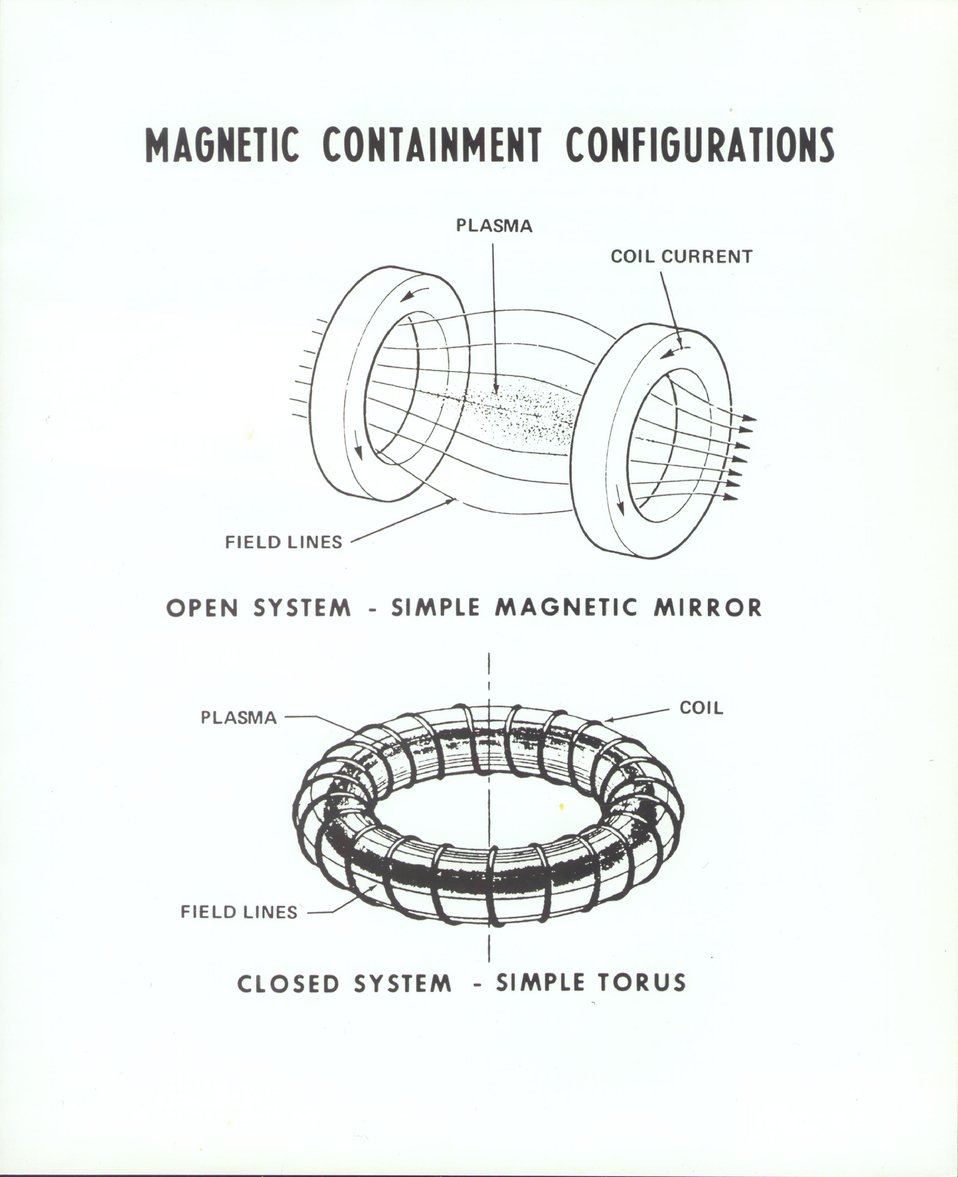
FUSION POWER FOR THE FUTURE...Two fundamental approaches to confinement of super-hot nuclear fuel in eventual controlled fusion reactors employ magnetic fields to 'bottle' the hot plasma. c. 1973